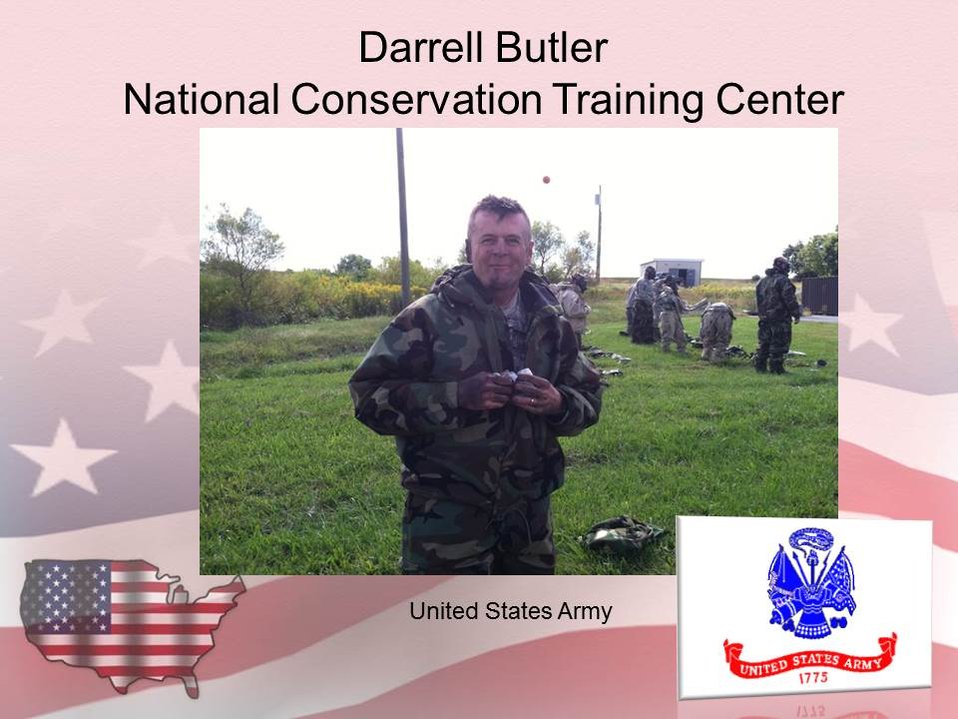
Darrell Butler